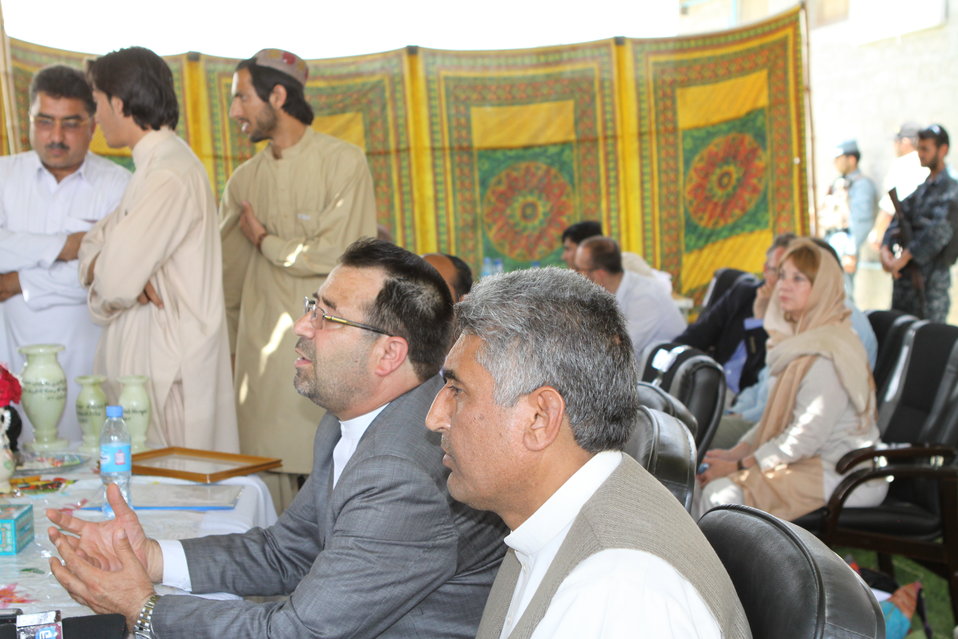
Bolan Poultry Farm